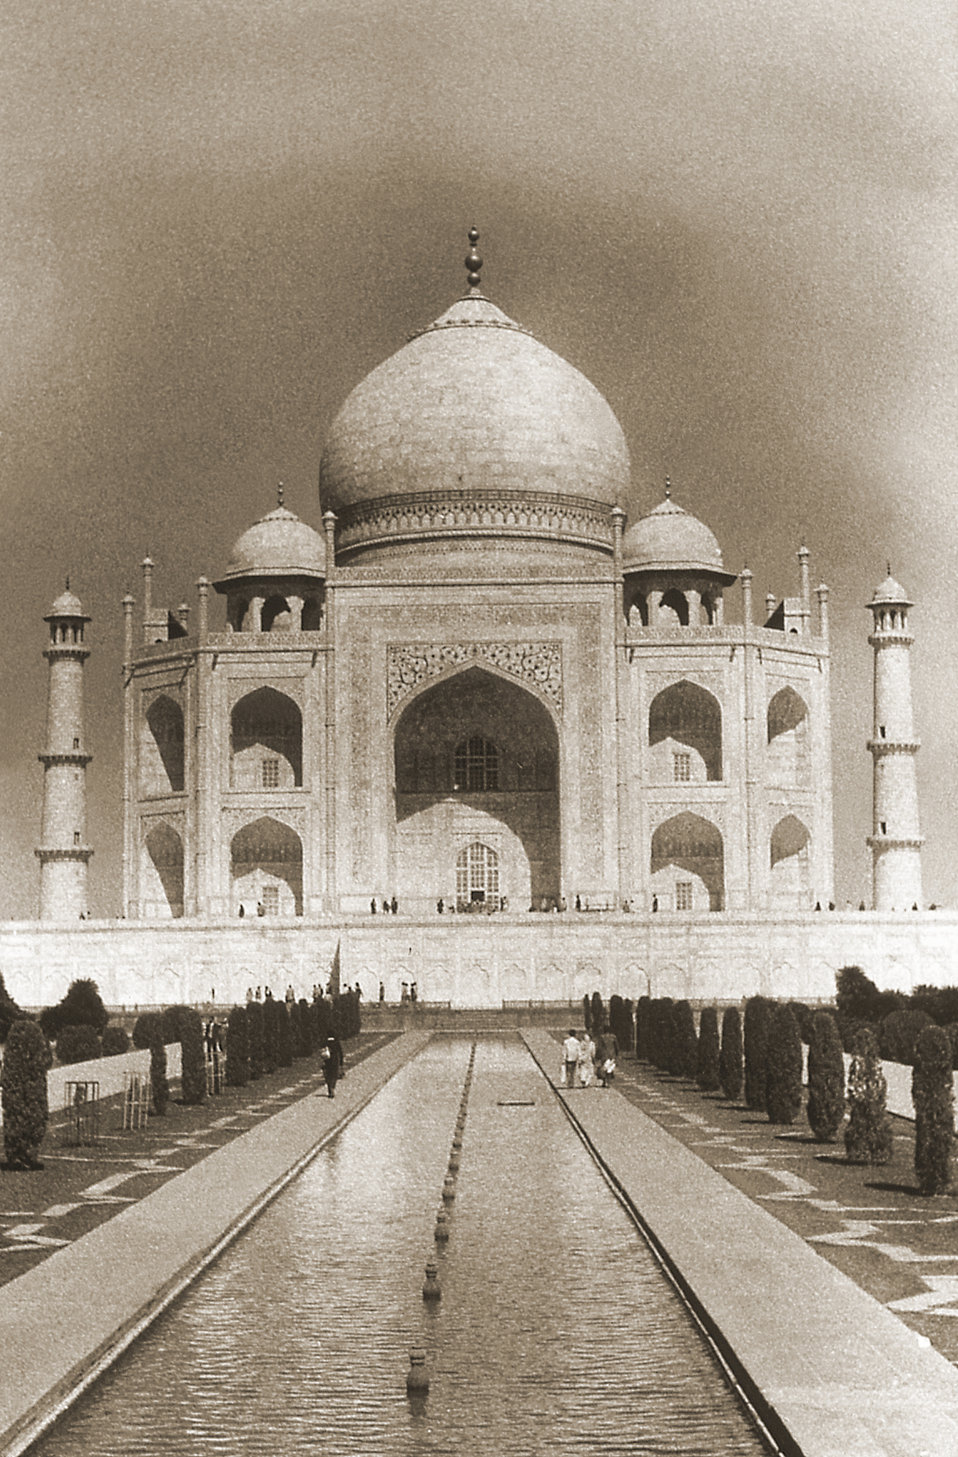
This image depicts the wondrous Taj Mahal in Agra, India in the country's northern state of Uttar Pradesh. The structure is 226 miles west of the state capital, Lucknow, and 124 miles to the south of India's capital city of New Delhi.